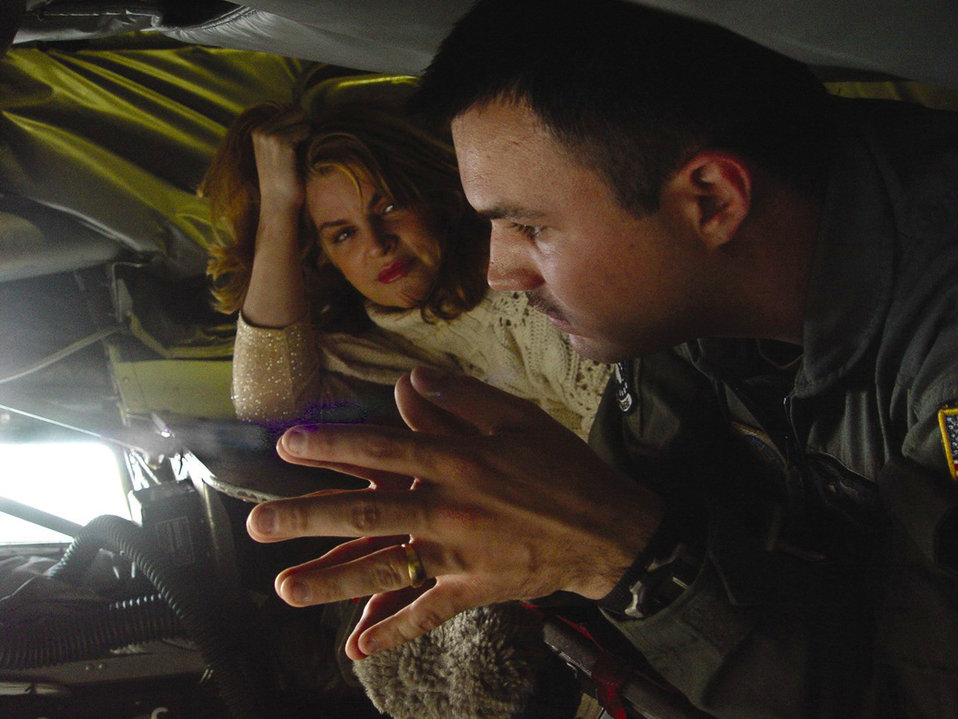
Kirstie Alley 'cheers' for McConnell

MCCONNELL AIR FORCE BASE, Kan. -- Senior Airman Robert Myers explains the refueling process from the boom operator's seat to Golden Globe-winning actress Kirstie Alley. Ms. Alley visited here March 8 to show her support for the troops. Airman Myers is assigned to the 344th Air Refueling Squadron.